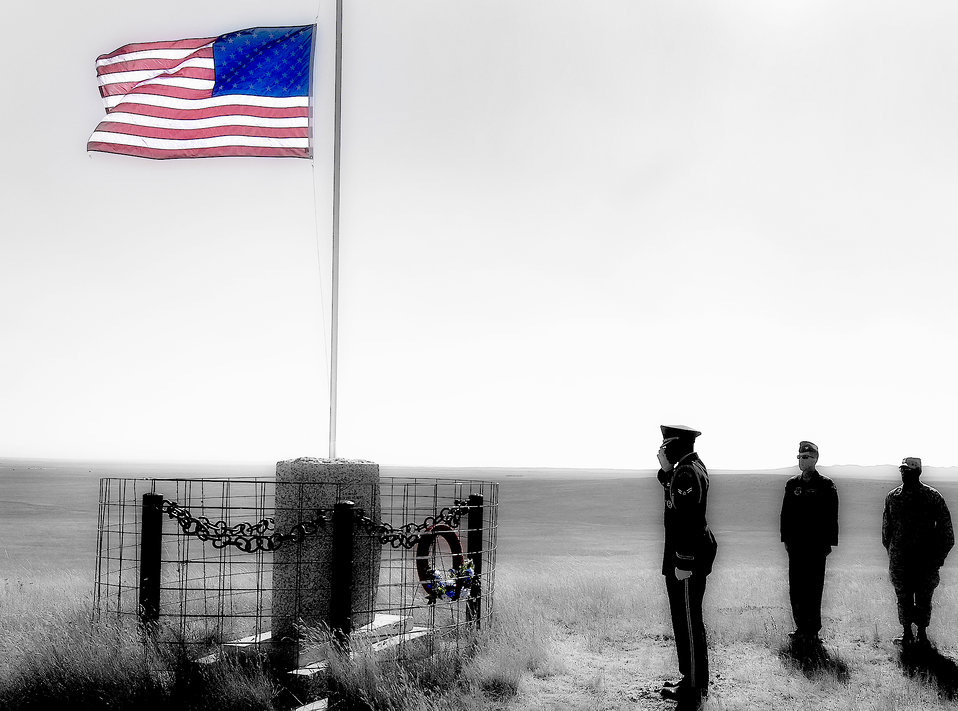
Never forget

Airman 1st Class Brandon Bussey salutes the Fury II Memorial Sept. 26, 2009, near Ekalaka, Mont. The memorial is in remembrance of four Airmen who lost their lives when a B-1B Lancer crashed 12 years ago. Airman Bussey is a 28th Logistics Readiness Squadron traffic management journeyman from Ellsworth Air Force Base, N.D.